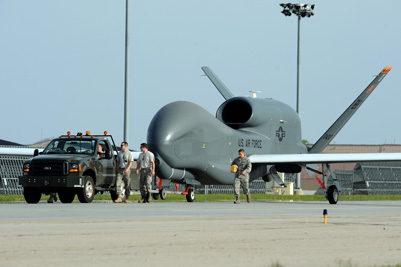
Grand Forks AFB Airmen welcome Global Hawk

Airmen from Grand Forks Air Force Base, N.D., welcome the first RQ-4 Global Hawk to the base May 26, 2011. The arrival marked the beginning of a new era of remotely piloted aircraft at the base.